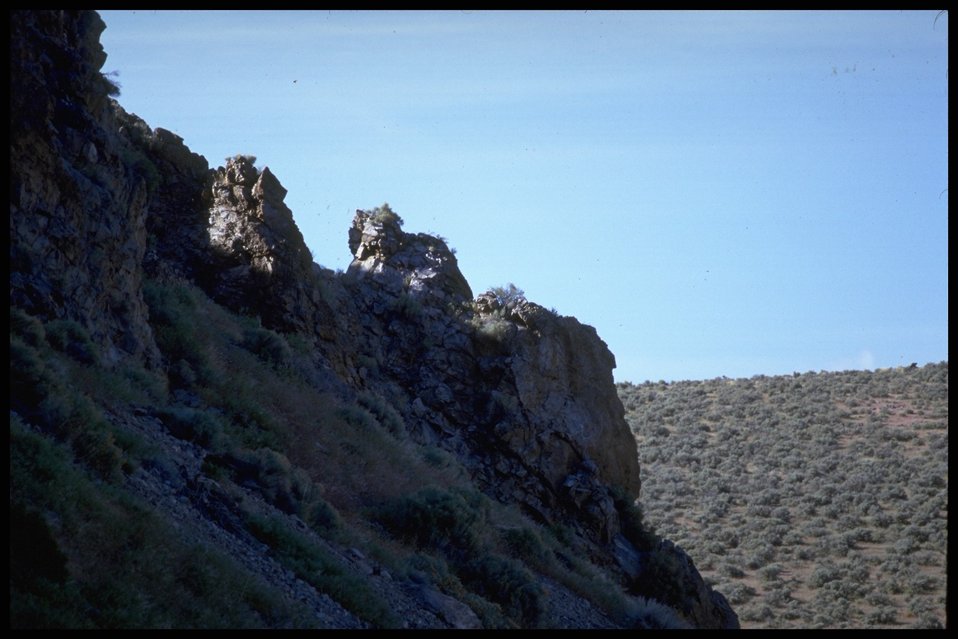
Scenic view of desert, Lakeview District.